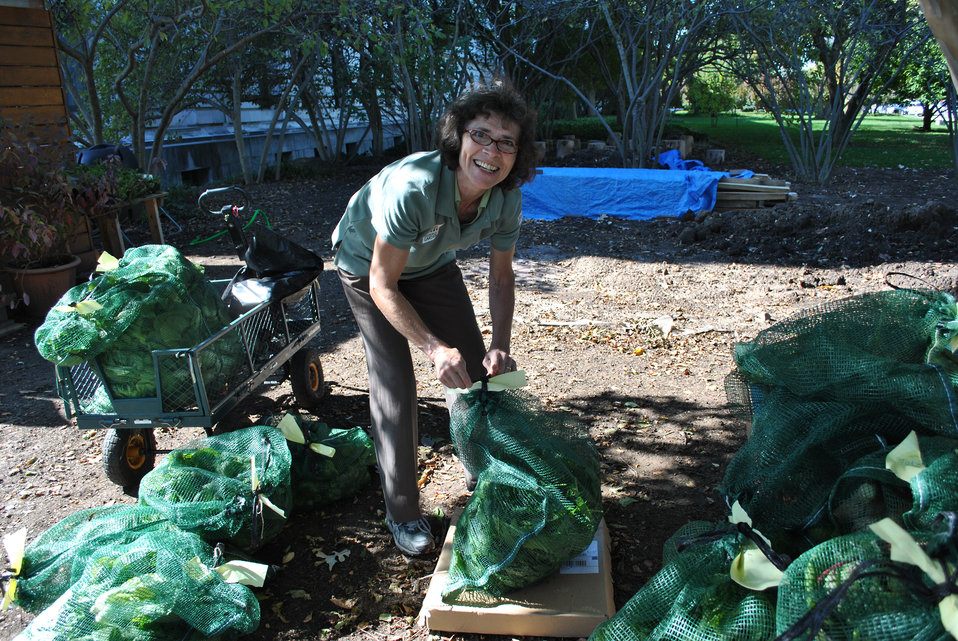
U.S. Department of Agriculture (USDA) Foreign Agricultural Service (FAS) volunteer Maria Nemeth-Ek helps label and sort 175 pounds of fresh produce harvested from USDA headquarters Peoples Garden on Oct. 18, 2013, including 84 lbs. of bok choy.